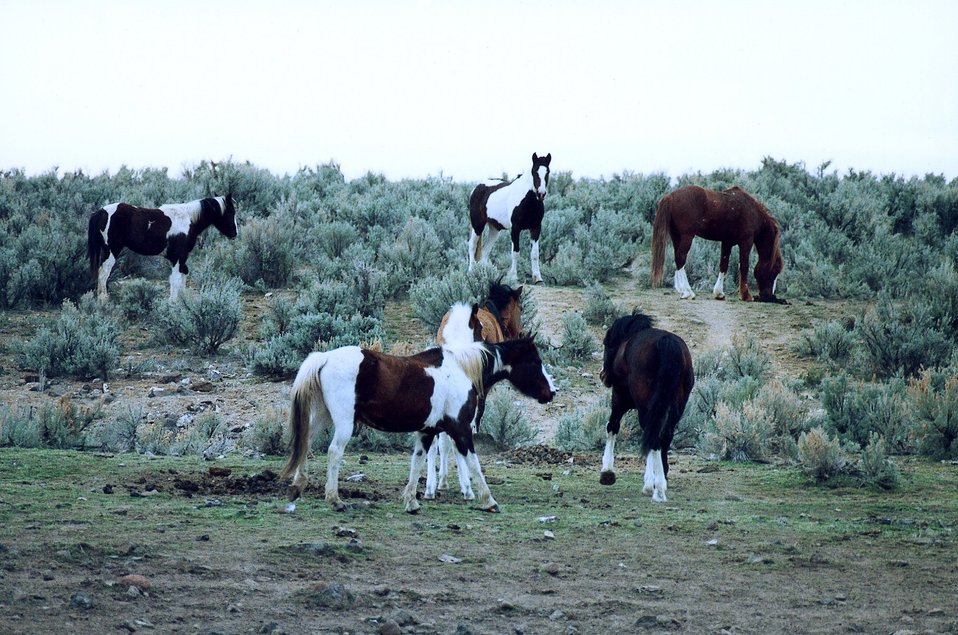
Medium shot of wild bachelor stallions grazing.